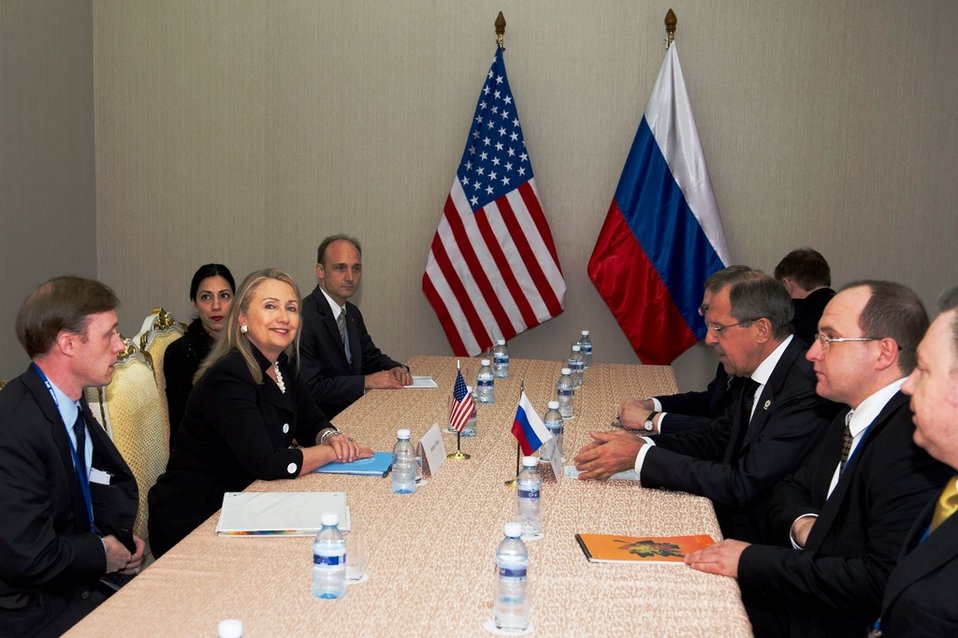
Secretary Clinton Meets With Russian Foreign Minister Lavrov

U.S. Secretary of State Hillary Rodham Clinton meets with Russian Foreign Minister Sergey Lavrov for a bilateral meeting during the East Asia Summit at the Peace Palace in Phnom Penh, Cambodia, November 20, 2012.